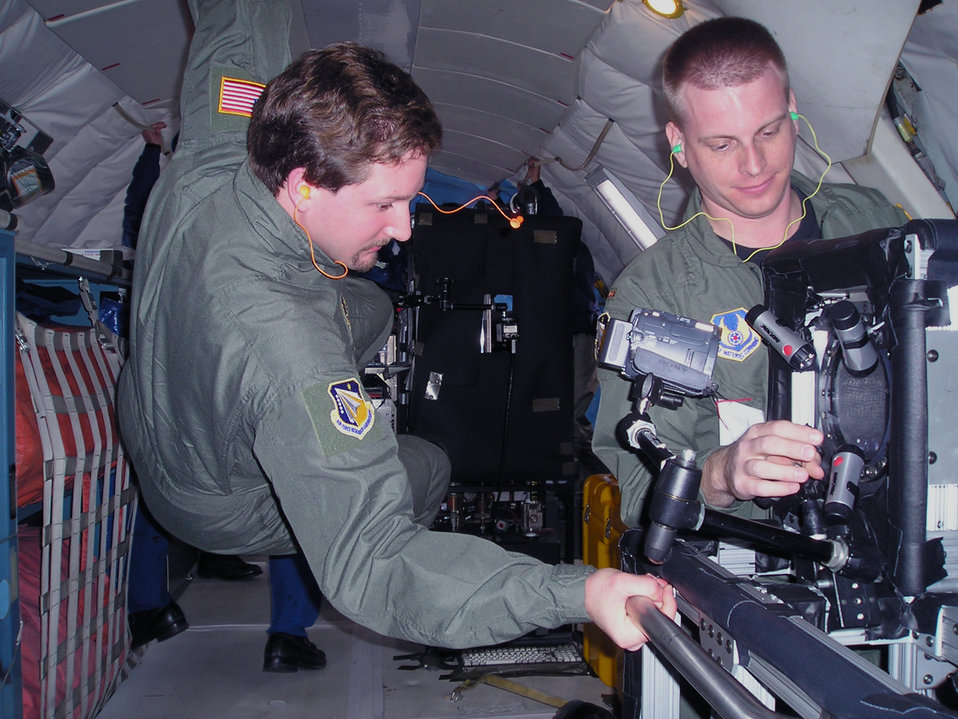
A weightless experiment

WRIGHT-PATTERSON AIR FORCE BASE, Ohio -- Travis Michalak (left) and 2nd Lt. Ryan Claycamp monitor an experiment aboard a specially equipped NASA KC-135A that simulates microgravity, or weightlessness, conditions in space. Both men are from the Air Force Research Laboratory's propulsion directorate. They endured about 160 weightless maneuvers to find new ways to cool electronic devices used in space vehicles like satellites, the space shuttle and the International Space Station. The team is attempting to remove the heat generated by electronic devices that will power the next-generation of space vehicles.